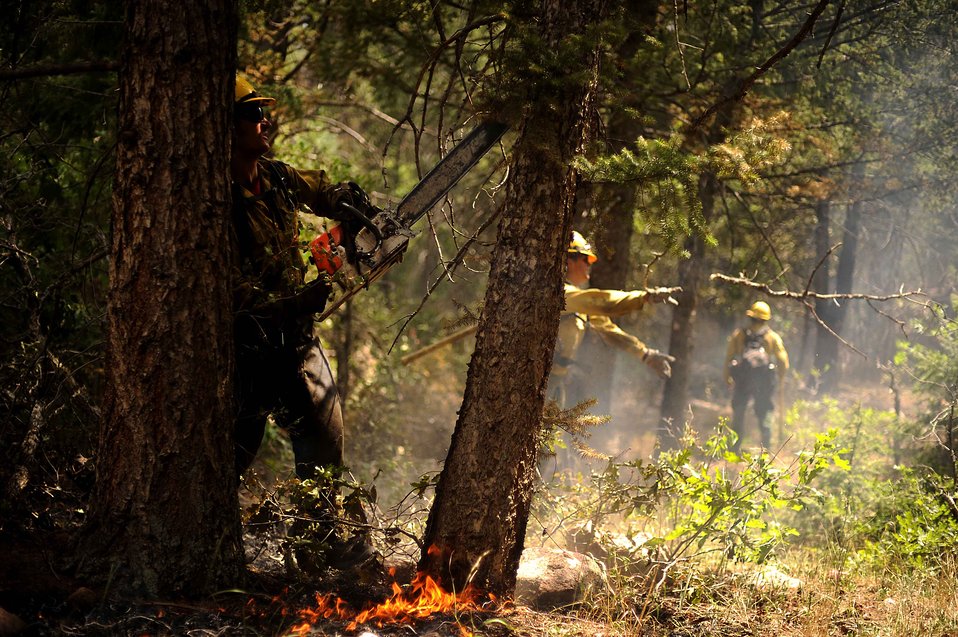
Cut a line

Brad Mabery downs a tree with a chainsaw while cutting and clearing a fire line in the Mount Saint Francois area of Colorado Springs, Colo., June 28, 2012. Mabery and the rest of the firefighters with the Vandenberg Air Force Base, Calif., Hot Shots are helping to battle several fires in Waldo Canyon.